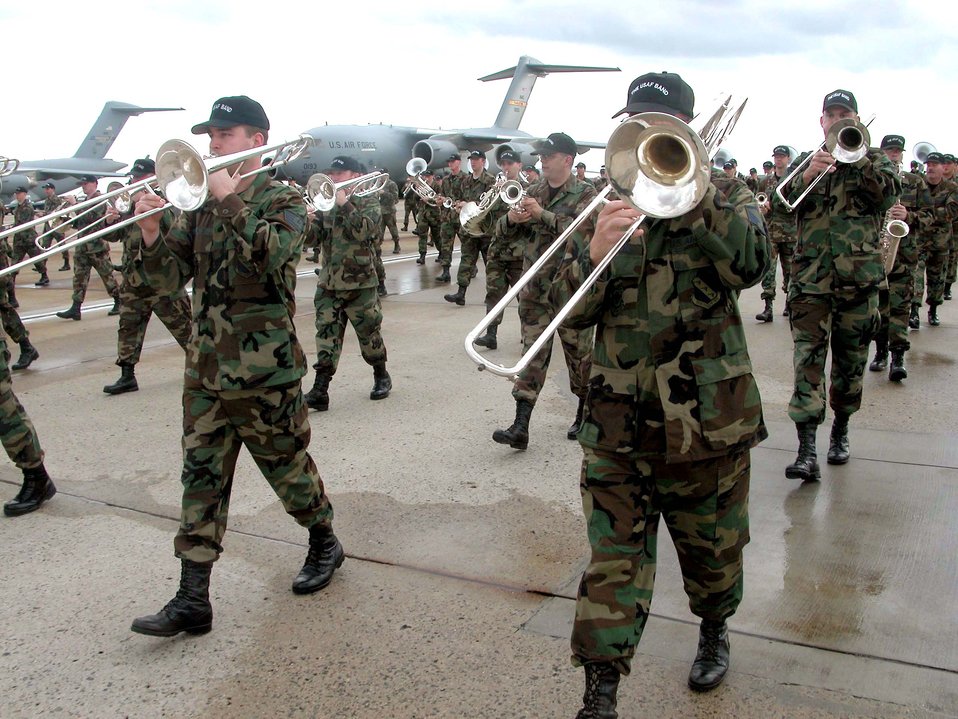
Air Force Band ready for inauguration

ANDREWS AIR FORCE BASE, Md. -- During practice here Jan. 13, the Air Force Band rehearses the march "Trombone Triumphant," one of three selections it will play in the presidential inauguration parade Jan. 20.